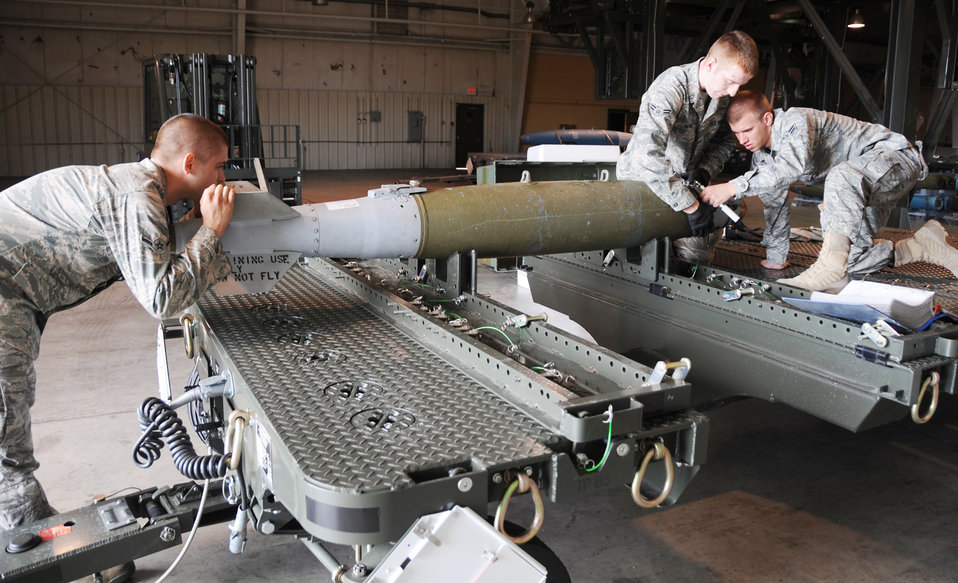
Just one more turn?

Airman John Baker, (left to right) Airmen 1st Class David Benner and Derrick Scott practice building a Guided Bomb Unit-38 Aug. 20 at Ellsworth Air Force Base, S.D. The GBU-38 is a 500-pound bomb which is commonly used with the B-1B Lancer. The Airmen are conventional maintenance crew members with the 28th Munitions Squadron.